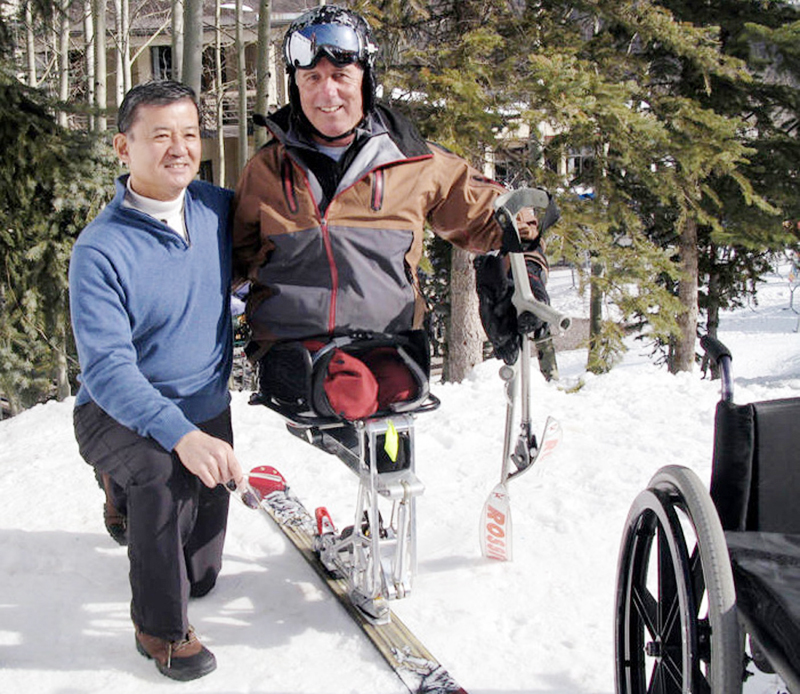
Clinic provides disabled vets pathway to paralympics

Veterans Affairs Secretary Eric K. Shinseki poses with Jim Martinson, an Army veteran who won the gold medal in downhill skiing at the 1996 Paralympics in Albertville, France, at the 24th National Disabled American Veterans Winter Sports Clinic March 28, 2010, in Snowmass Village, Colo.